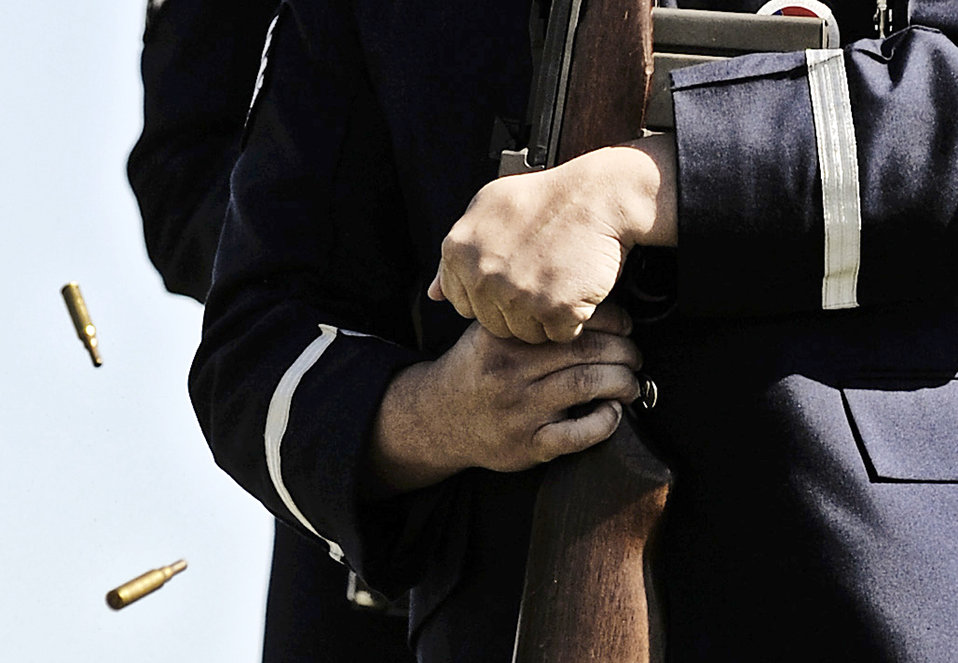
Ready for the next volley

Firing party members discharge spent shells and prepare for the next volley Oct. 15, 2010, at the Jefferson Barracks National Cemetery in Missouri. The Honor Guard from Scott Air Force Base, Ill., performs numerous details for Air Force veterans at this cemetery as well as covering funerals throughout a four-state region.